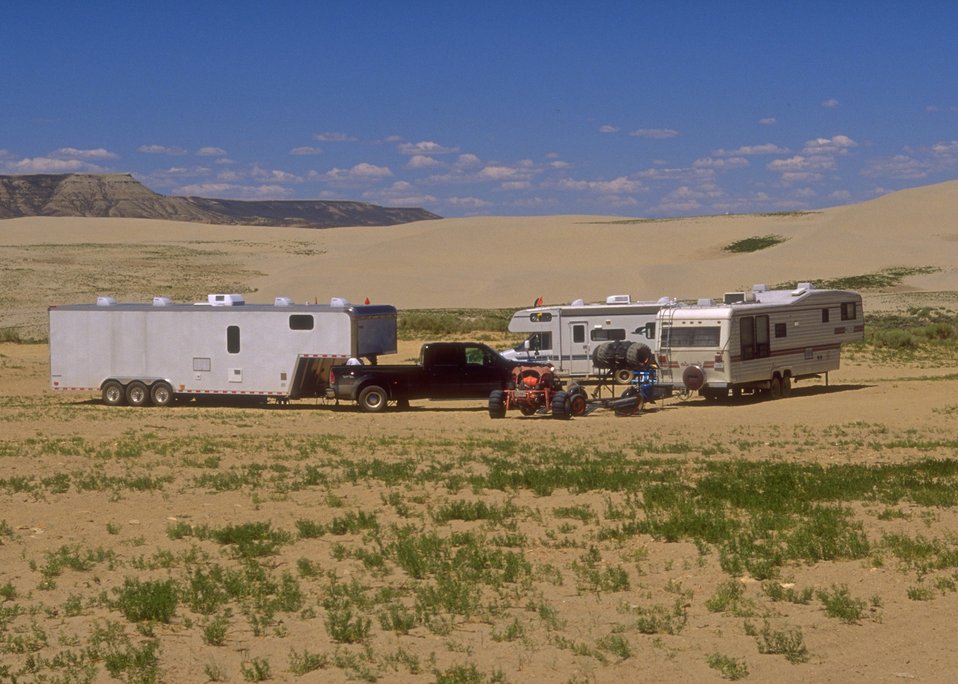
Camping at Sand Dunes OHV Area, Rock Springs Field Office.